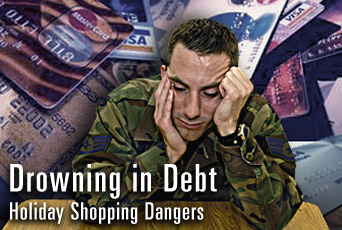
Mountains of debt

Holiday shopping can lead to mountains of debt.